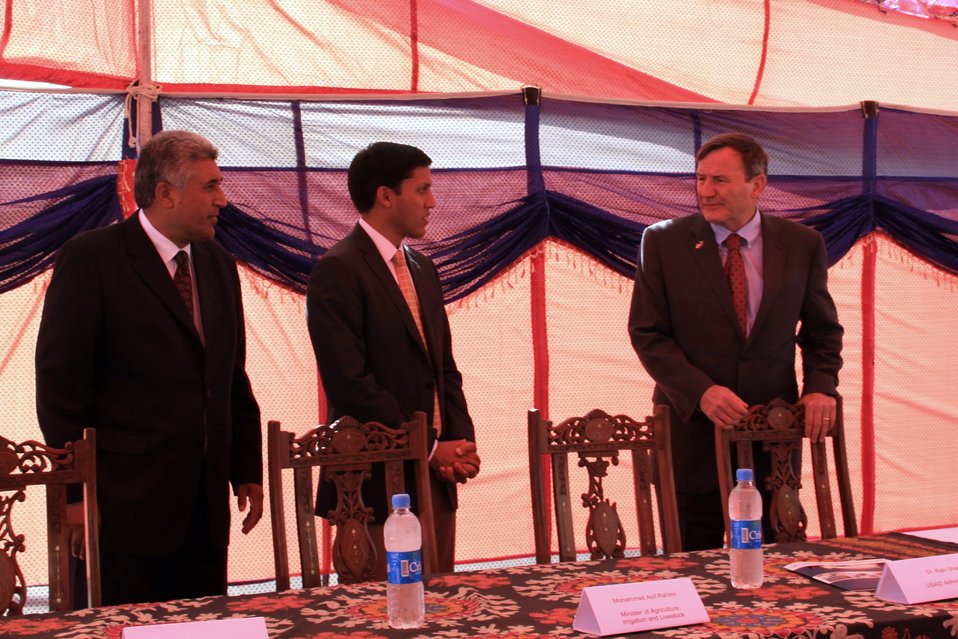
Badam Bagh Farm